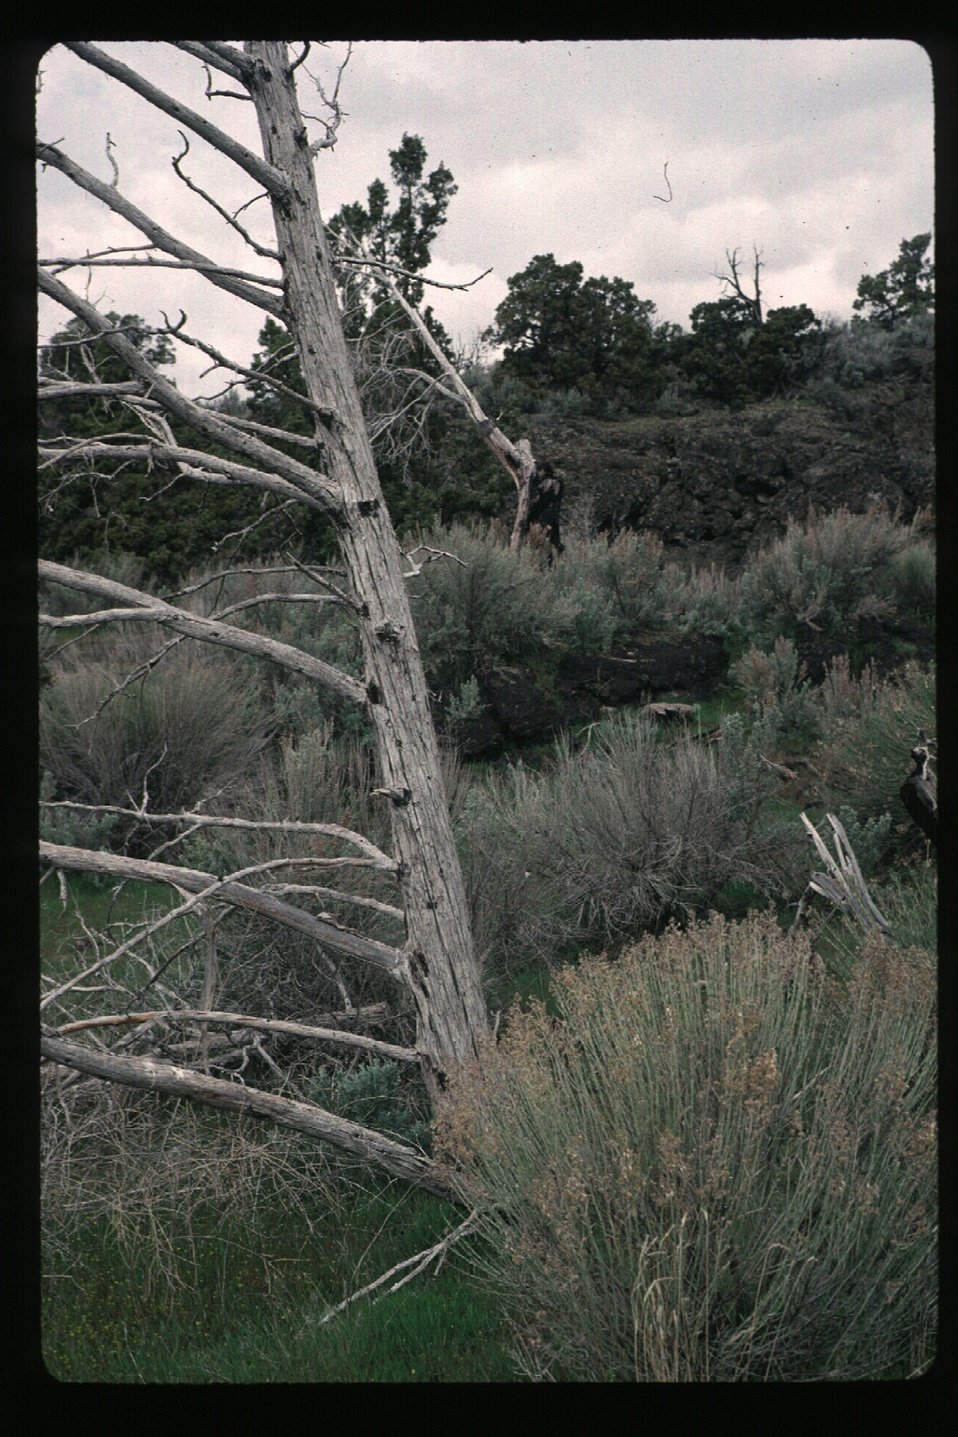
Hells Half Acre Wilderness Idaho Falls Field Office USRD Upper Snake River District